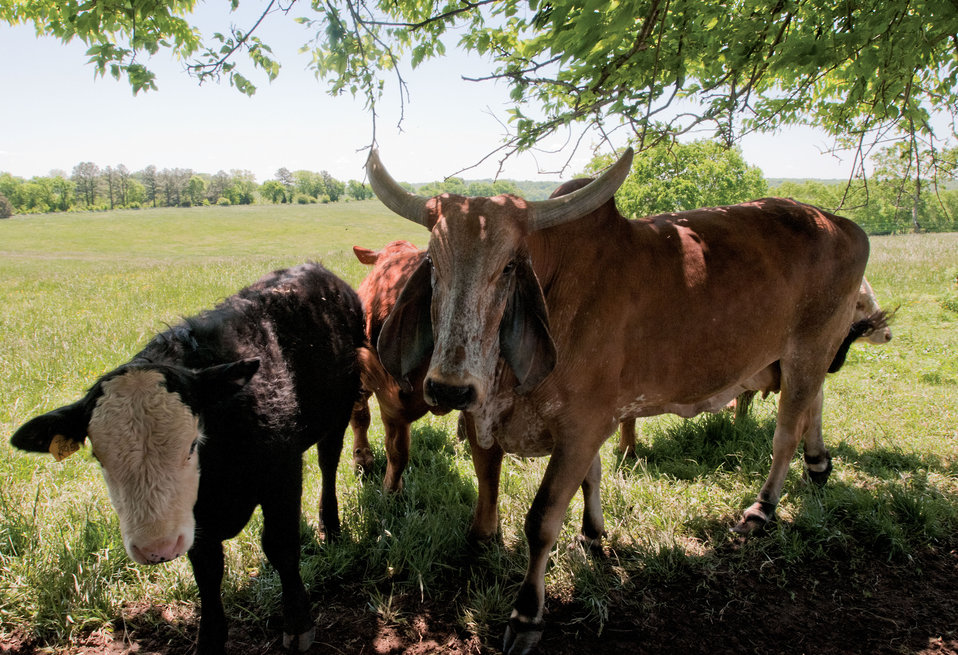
Bunny the pet Brahma cow (right) and some of the 65 cattle and 30 calves that are born, raised and roam the pastures of Brookview Farm eating grass or resting under shade trees on, Thursday, May 5, 2011 in Manakin-Sabot, VA. They are processed for beef, for Fall Line Farms a local food cooperative in the Richmond, VA area that offers a wide variety of household food staples and specialty items on an ever changing inventory of fruits, vegetables, meats, soaps, eggs, cheeses, flowers, honey, pastas, sauces, syrups, baked goods, mushrooms, flour and grains. Suppliers post what they have on a Lulus Local Food online listing and customers (who pay seasonal dues) can make their selection. Every Thursday suppliers deliver orders to, one of several pick-up points, designated by the customers in or around the Richmond area.